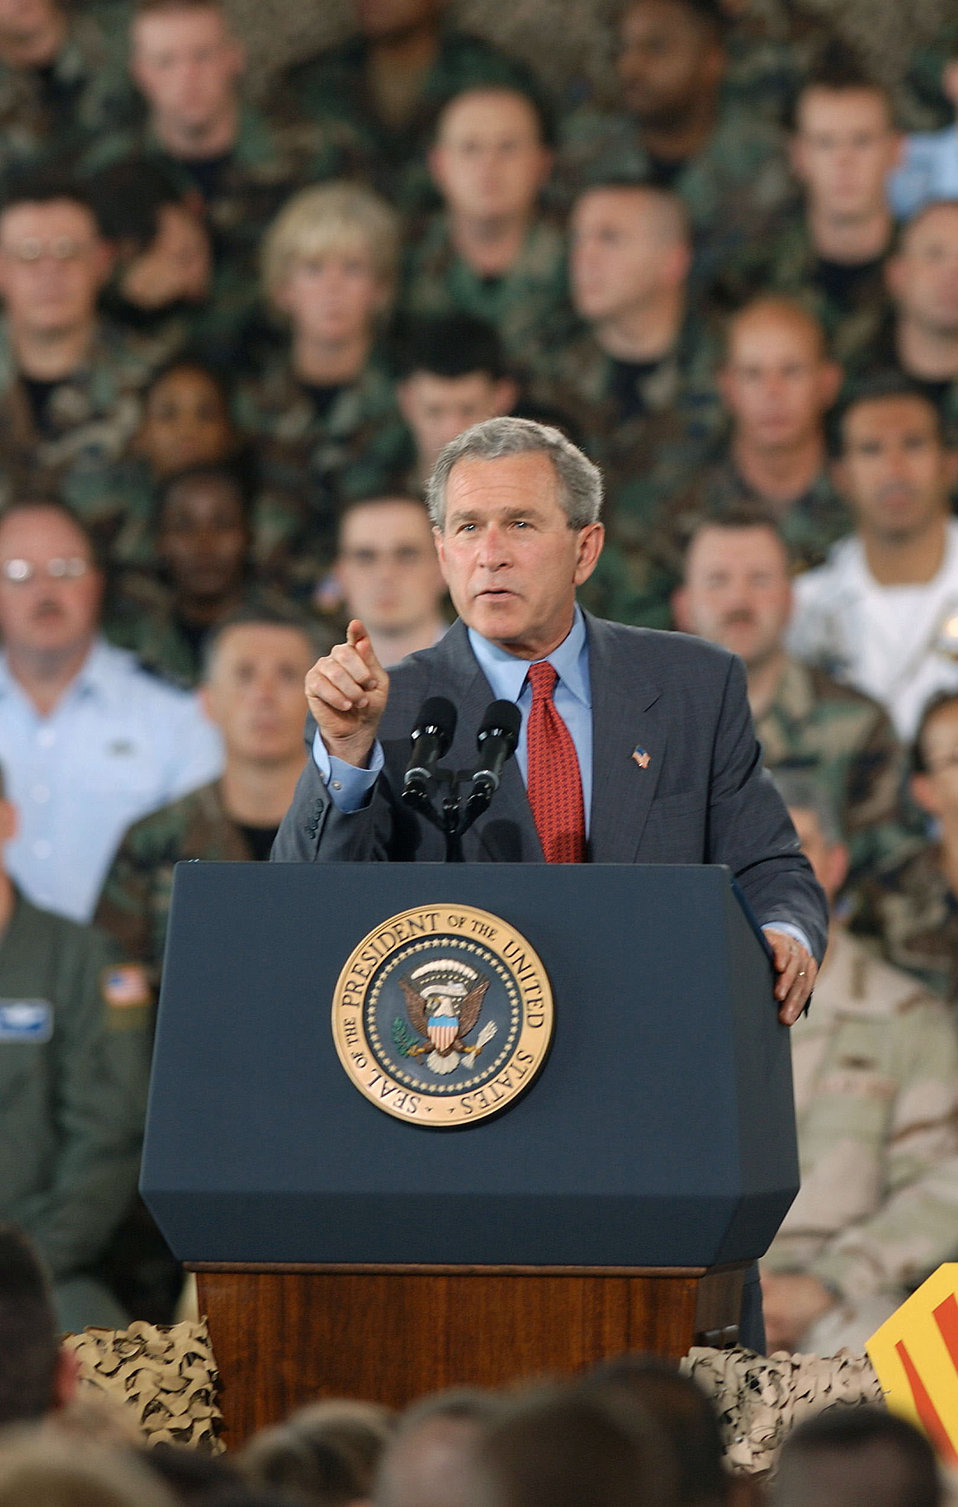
President Bush visits MacDill AFB

MACDILL AIR FORCE BASE, Fla. -- President George W. Bush addresses servicemembers here June 16. His speech was broadcast live to servicemembers worldwide. The president said with the transfer of sovereignty two weeks away, the future of a free Iraq is coming into view.